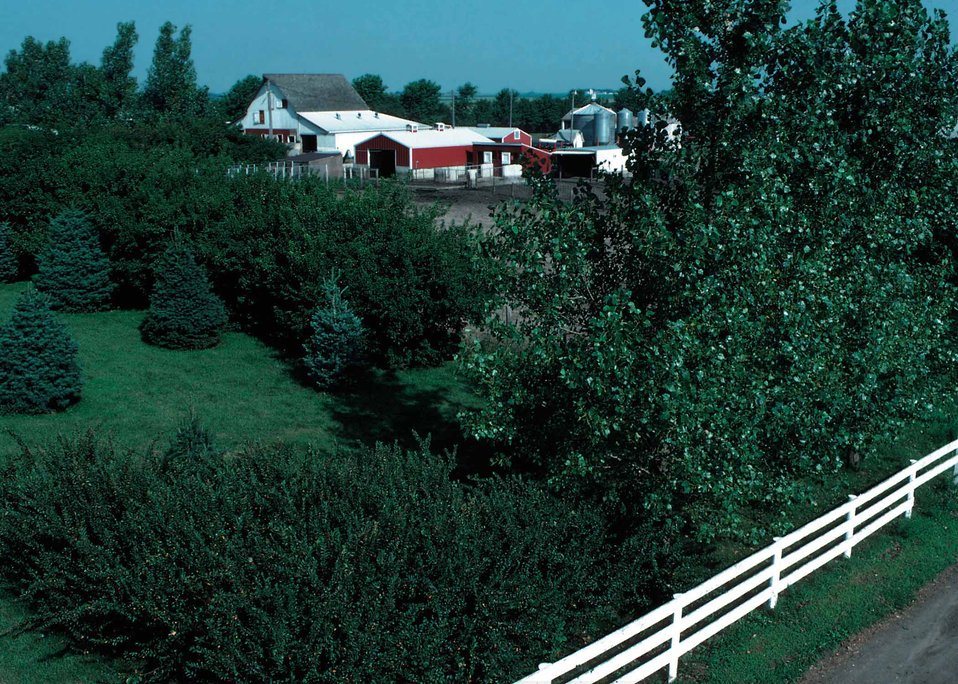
Multi-row farmstead windbreak in Pocahontas County, Iowa, includes shrubs, conifers, and deciduous trees.